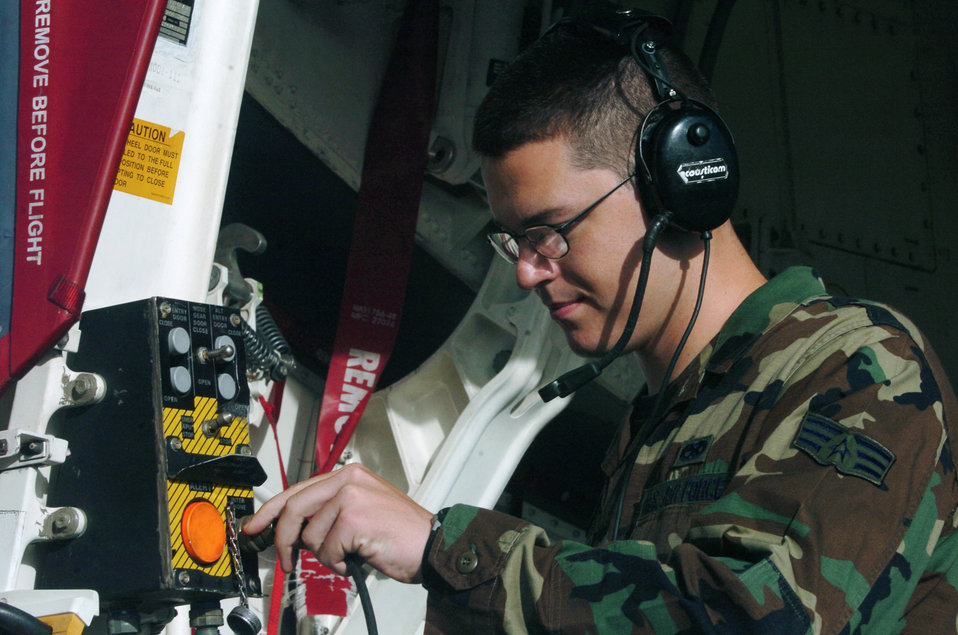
Keeping Spirits high

ANDERSEN AIR FORCE BASE, Guam -- Senior Airman James Casselman inspects a B-2 Spirit bomber before a morning mission here. Bomber aircraft have had an ongoing presence on the island since February 2004. Airman Casselman is an avionics specialist deployed from the 509th Bomb Wing at Whiteman Air Force Base, Mo.